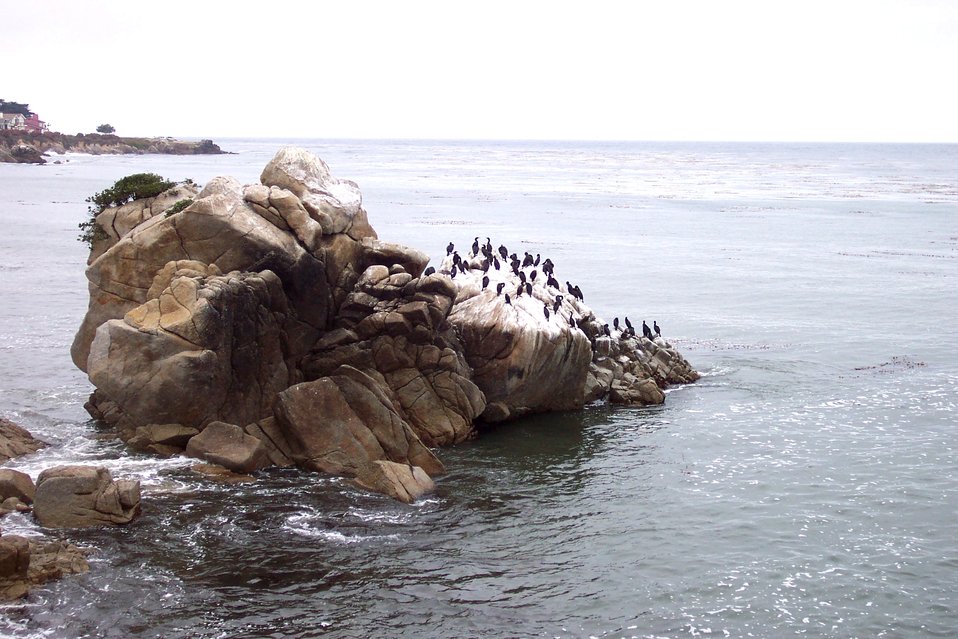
A flock of Brandt's Cormorants find a good roosting spot on an offshore rock between Lovers Point and Point Pinos.